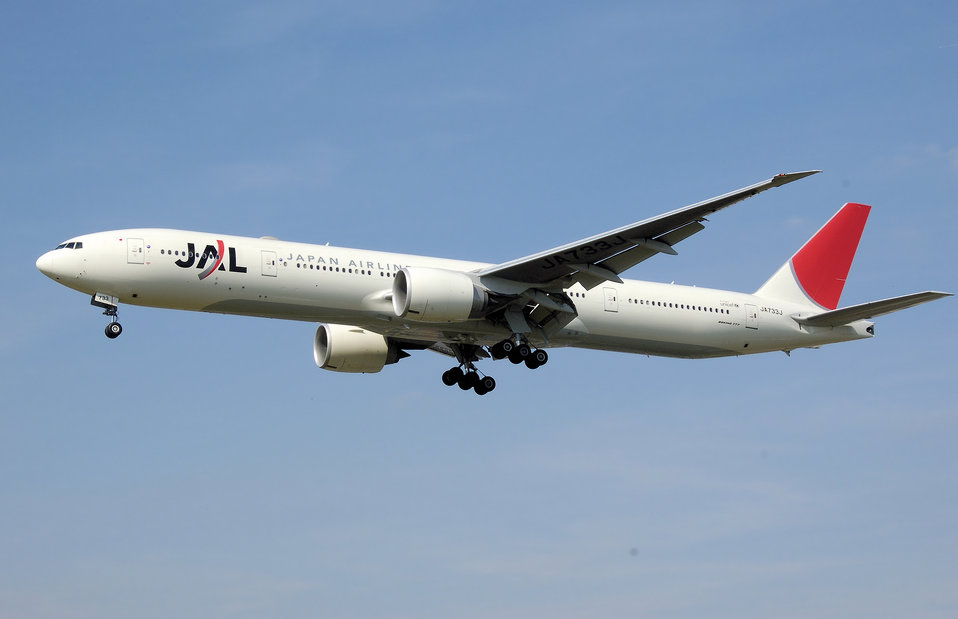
Japan.airlines.b777-300.ja733j.arp